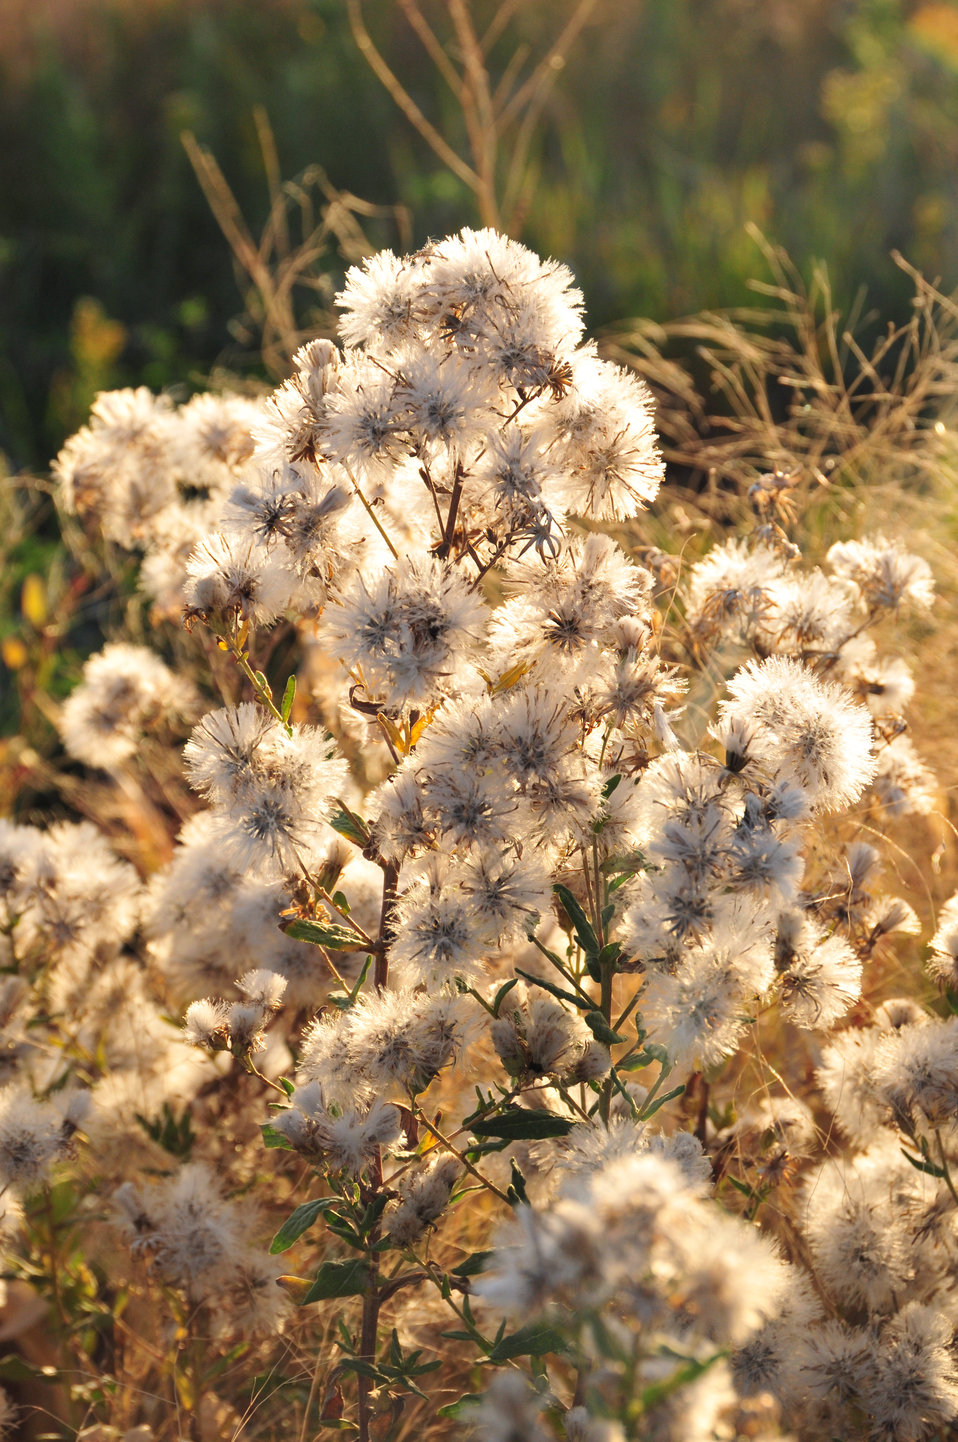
False Boneset (Kuhnia eupatorioides) on Mixed Grass Prairie of Lacreek NWR

The backlit seeds of false boneset (Kuhnia eupatorioides) on Mixed Grass Prairie of Lacreek NWR. Within a few weeks, the wind will scatter the seeds across the prairie. False boneset has one of the deepest root systems of any native plant in mixed grass prairie, penetrating more than 17 feet down into the soil. During severe droughts, when all other plants have gone dormant or died for lack of moisture, false boneset remains green.